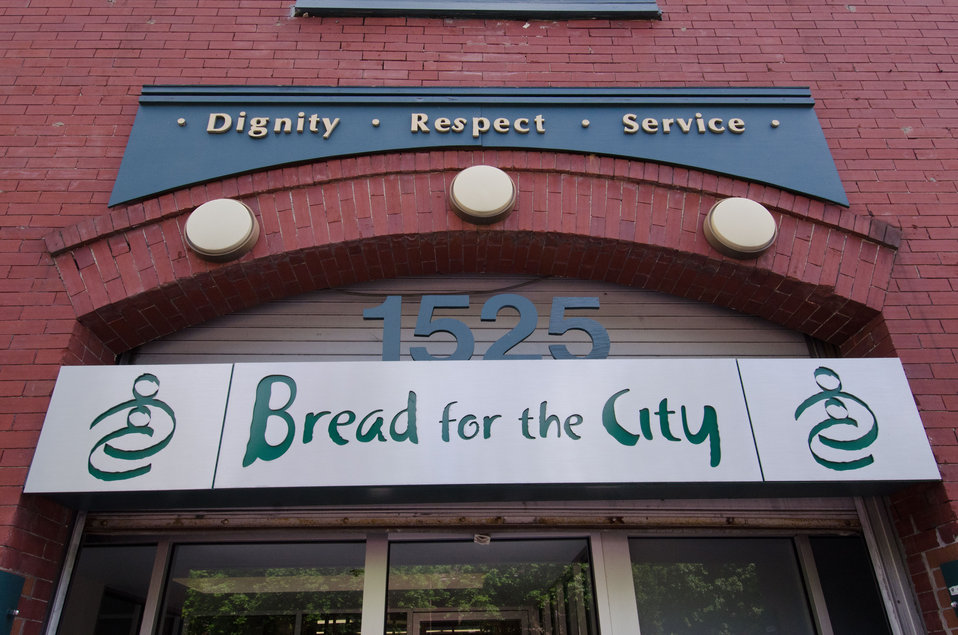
Bread for the City in northwest Washington, DC, on Friday, April 29, 2011.